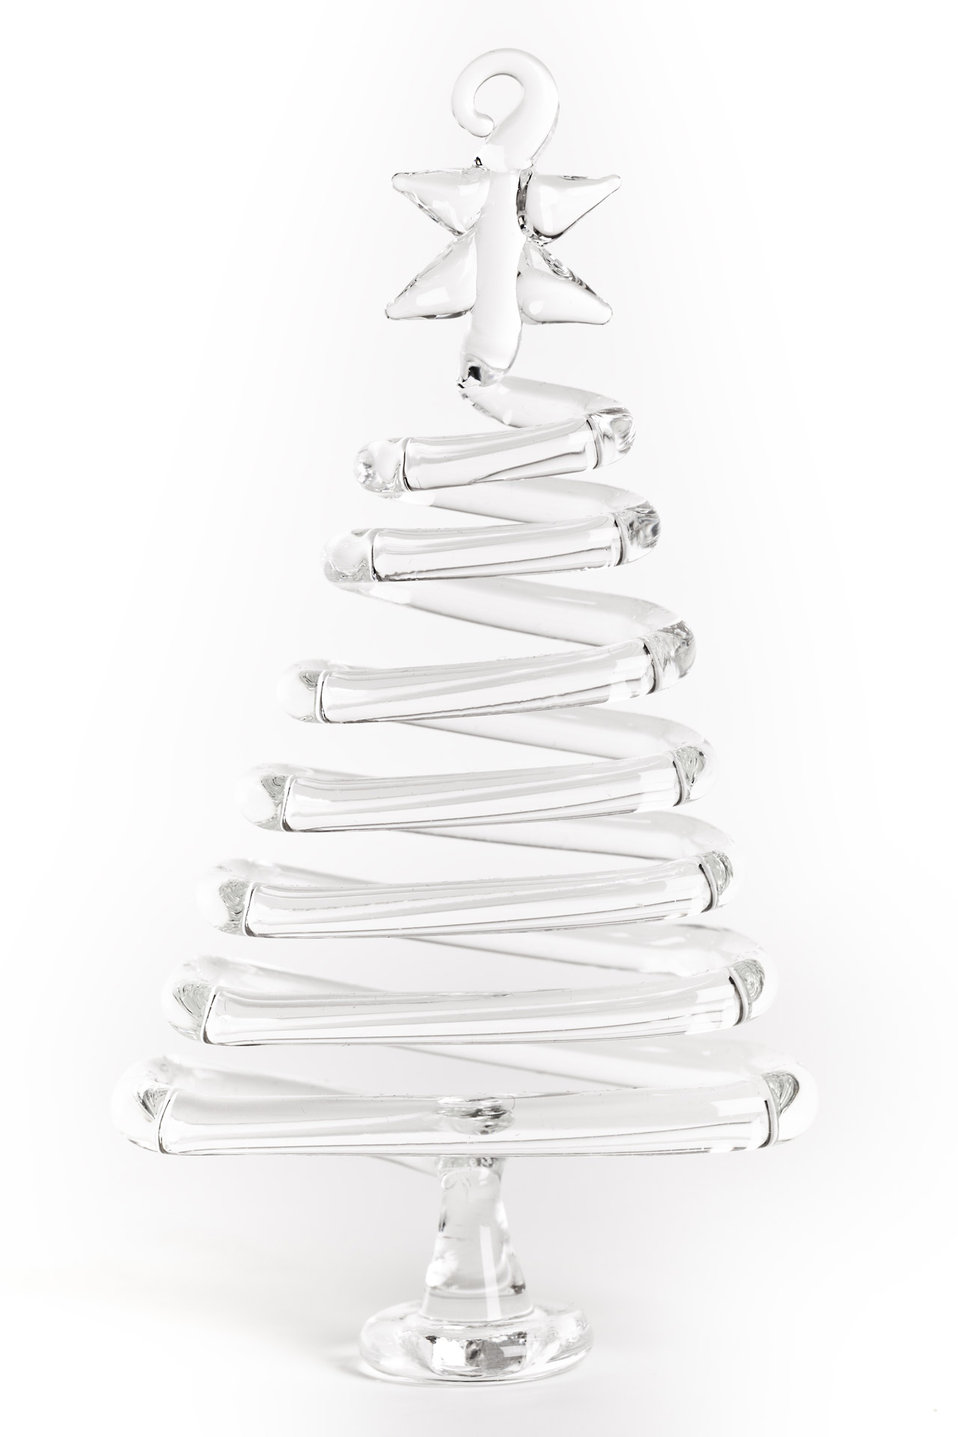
Glass christmas tree isolated on white background.